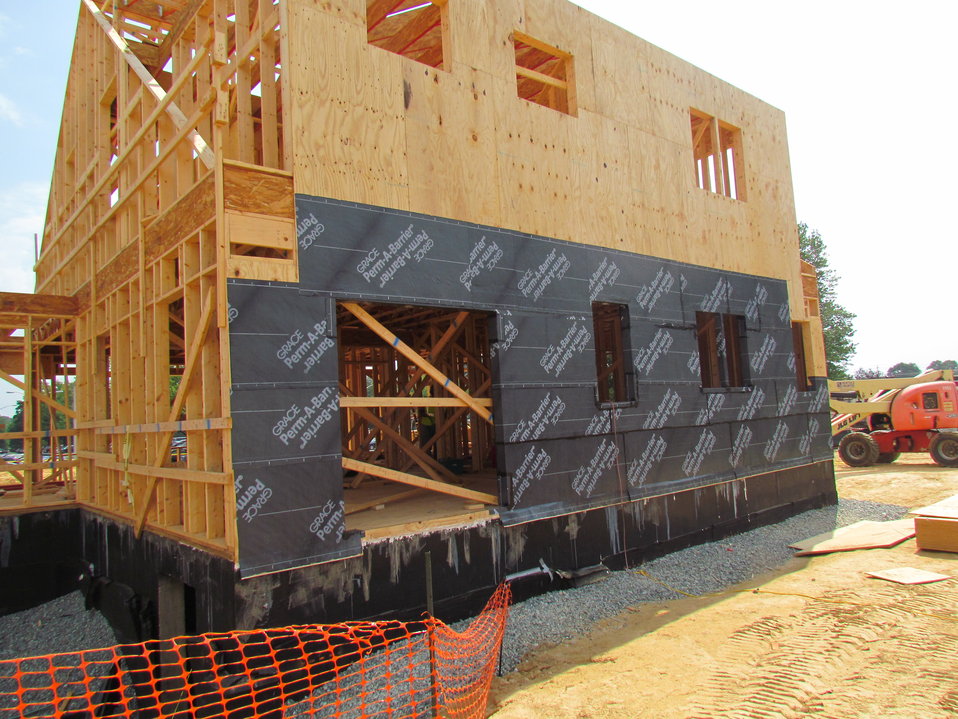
Net-Zero Energy Residential Test Facility - Photo showing the beginning of the installation of the air/moisture barrier to the lower portion of the north wall of the facility.